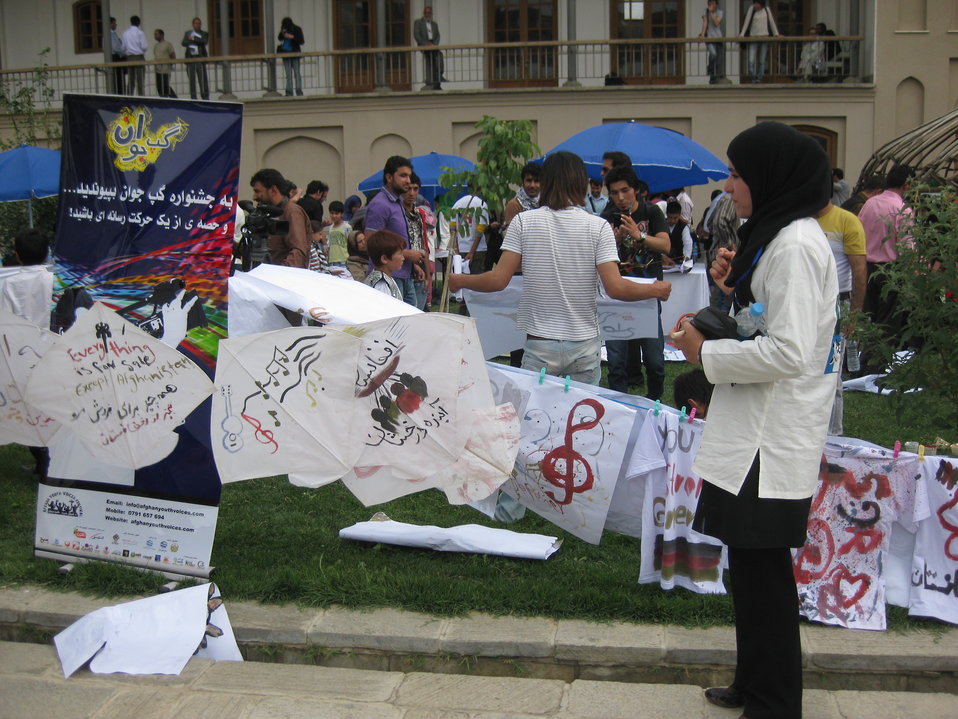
Afghan Youth Voices 082